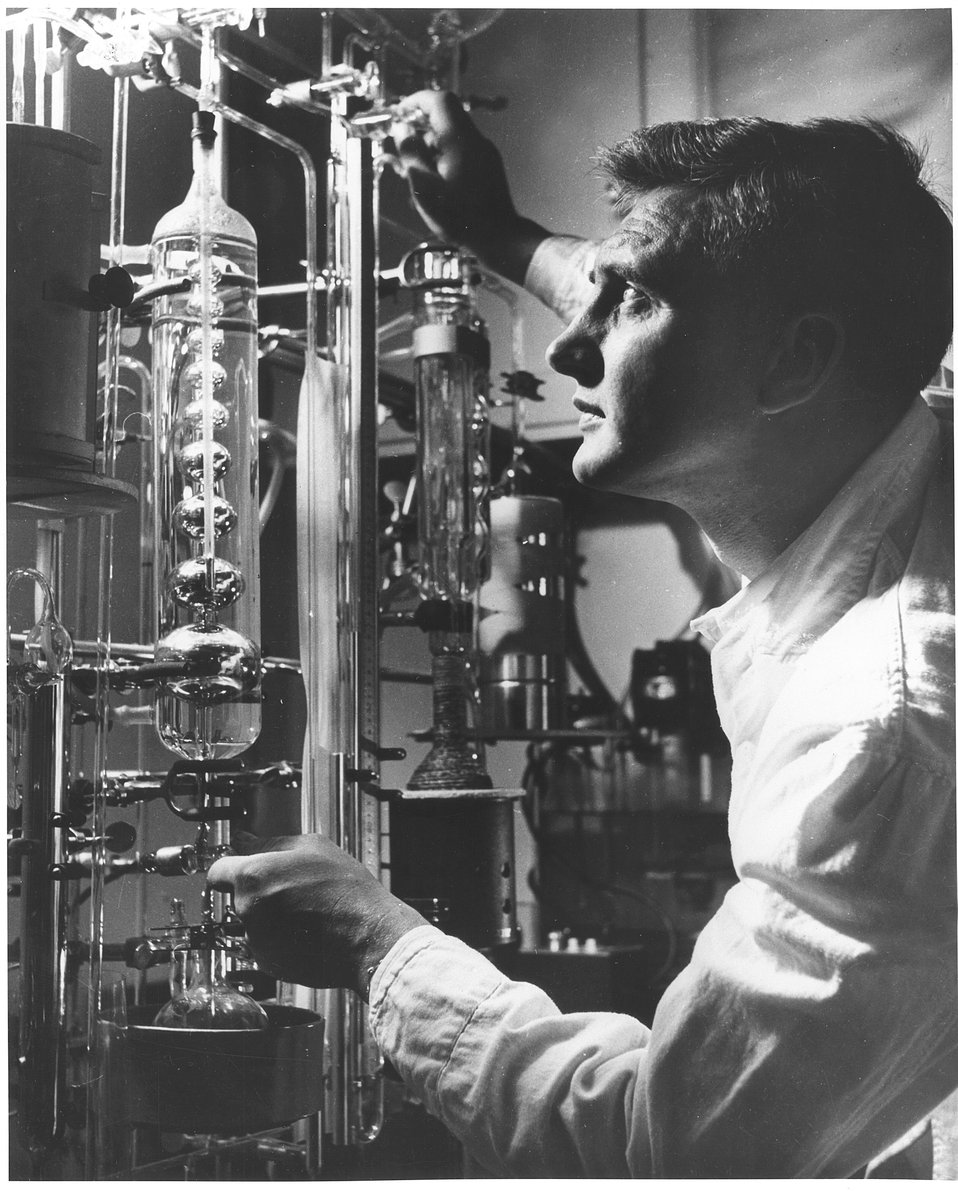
A young chemist adjusts apparatus in a Hanford Laboratory. Vast savings have resulted from laboratory work that has improved old processes or paved the way for the use of new ones. c. 1961